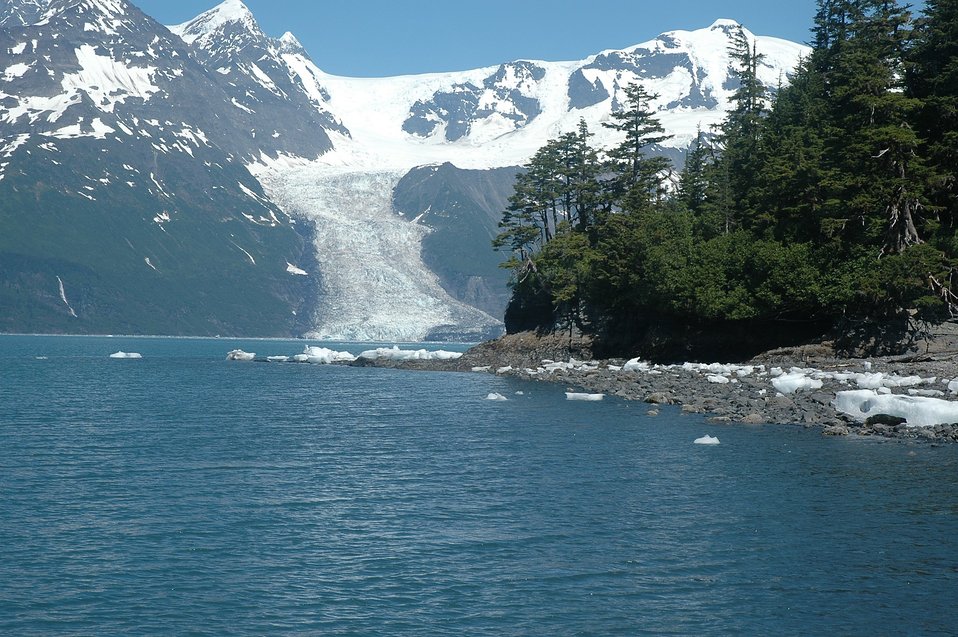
A view of a glacier in Barry Arm, connecting Harriman Fjord with College Fjord.